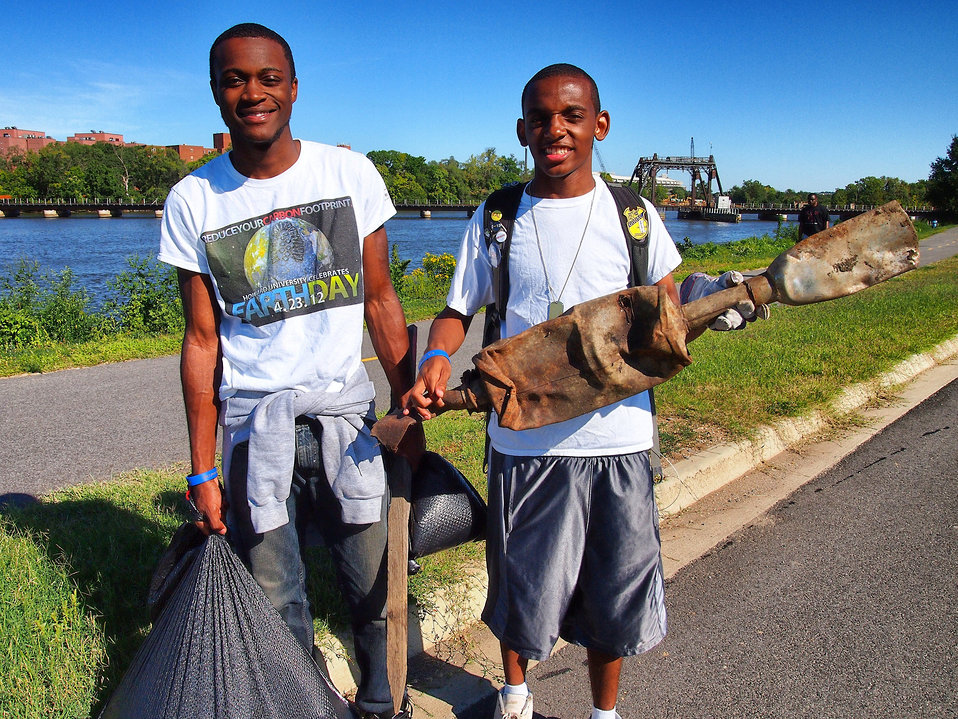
September 15, 2012 Howard University students found muffler during Anacostia River cleanup

Howard University students Brian Hicks (left) and Andrew Addison (right) found an exhaust system along the banks of the Anacostia River in Washington, D.C.

Around the world, the top ten items typically found includes cigarettes, caps/lids, plastic beverage bottles, plastic bags, and food wrappers/containers.

Howard University students are regular participants in the International Coastal Cleanup Day and are a valuable asset to the cleanup efforts in the Anacostia River.

More EPA information on this global event